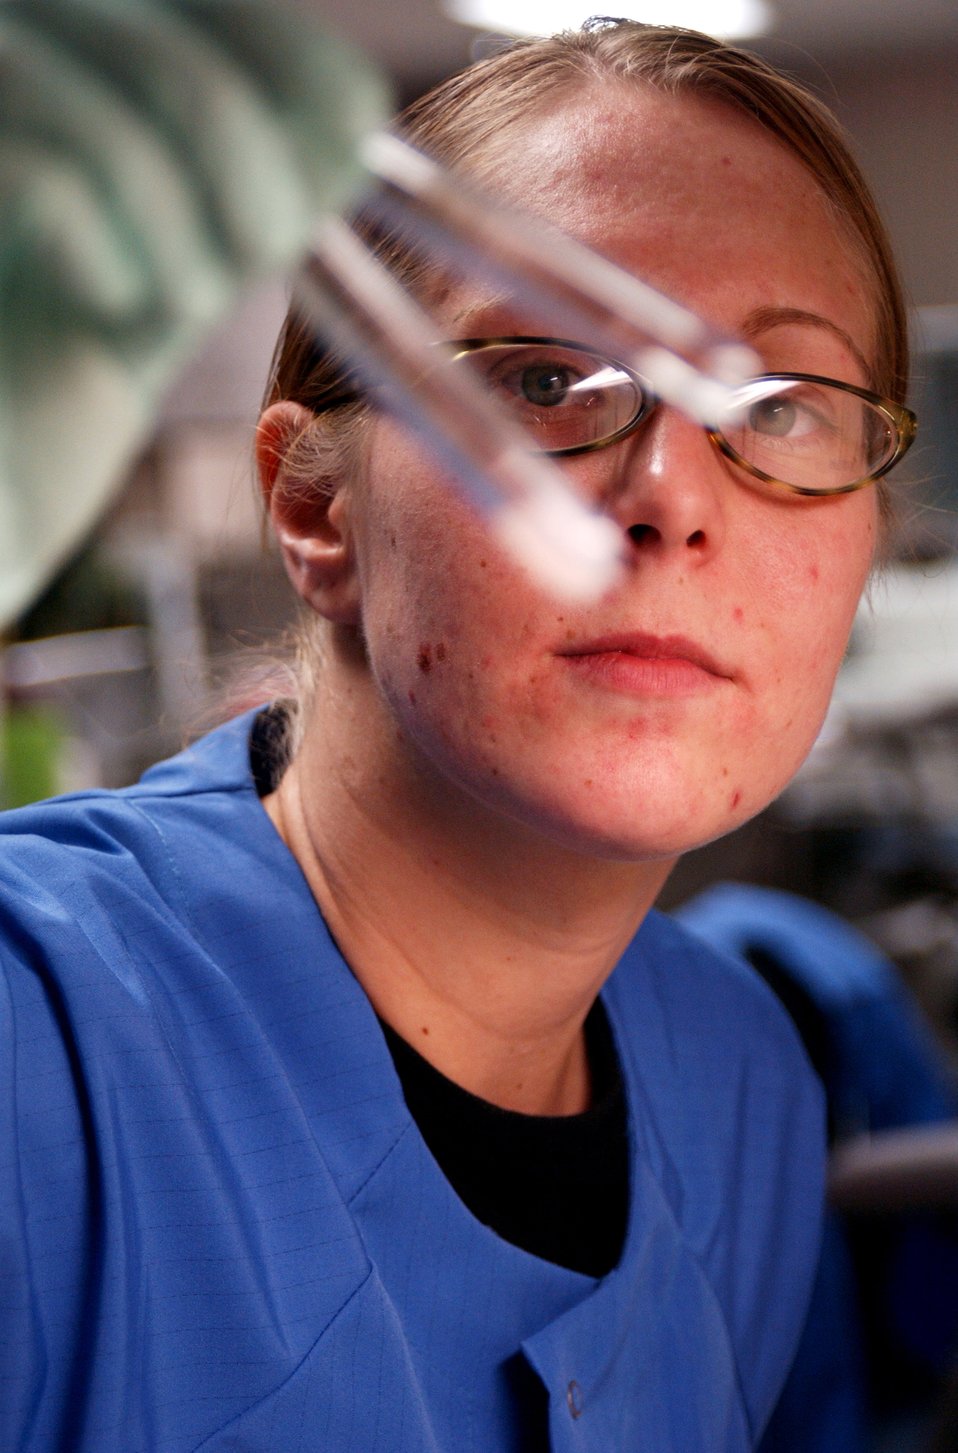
Testing samples

Staff Sgt. Melissa Diaz visually inspect a fluid sample for traces of protein by comparing it to a control fluid sample Dec. 12 at Eielson Air Force Base, Alaska. If a protein is present, the fluid sample will turn a different color in comparison to the control sample. Sergeant Diaz is a laboratory technician assigned to the 354th Medical Group. Laboratory technicians use various methods to test for abnormalities such as bacteria for clinical diagnosis.